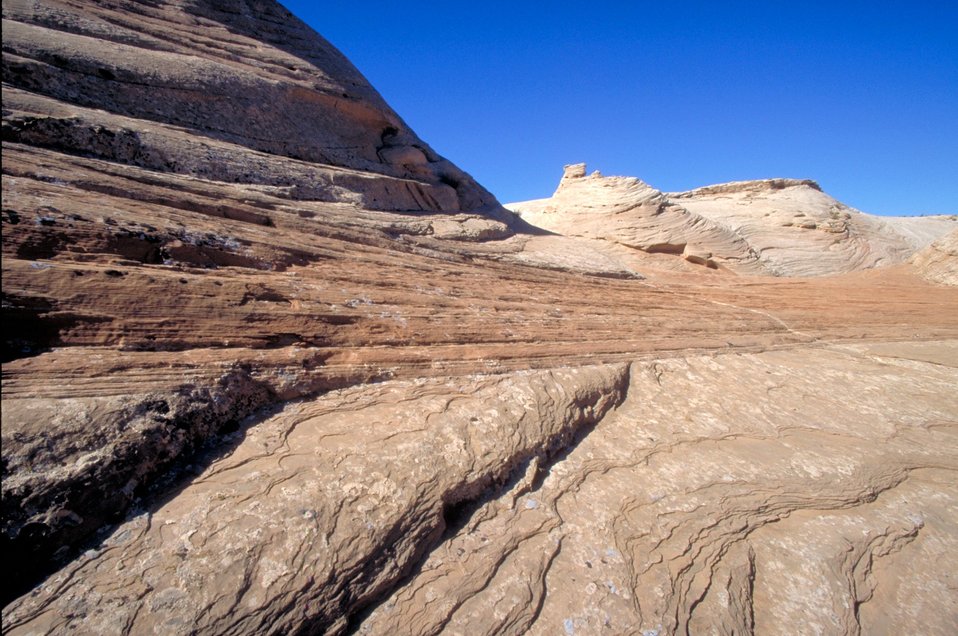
Slickrock formations near head of Spring Canyon.